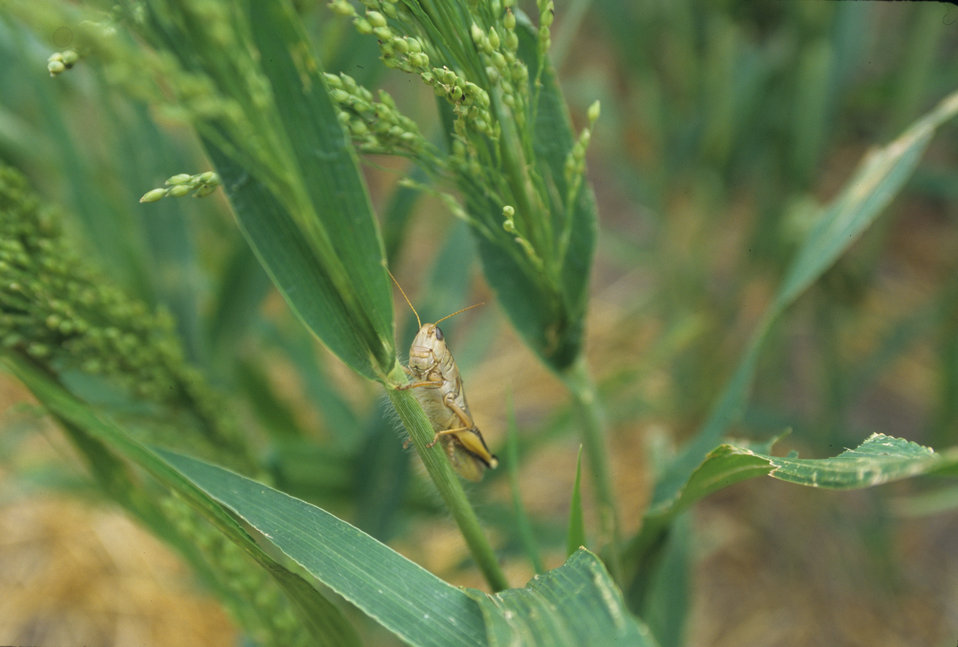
The Two-striped Grasshopper (Melanoplus bivittatus) has a pair of pale yellow stripes running along the top of it body from above its eyes to the hind tip of its wings identify this species. This is a very common and sometimes destructive species in the U.S. and Canada feeding on grasses and leafy plants.